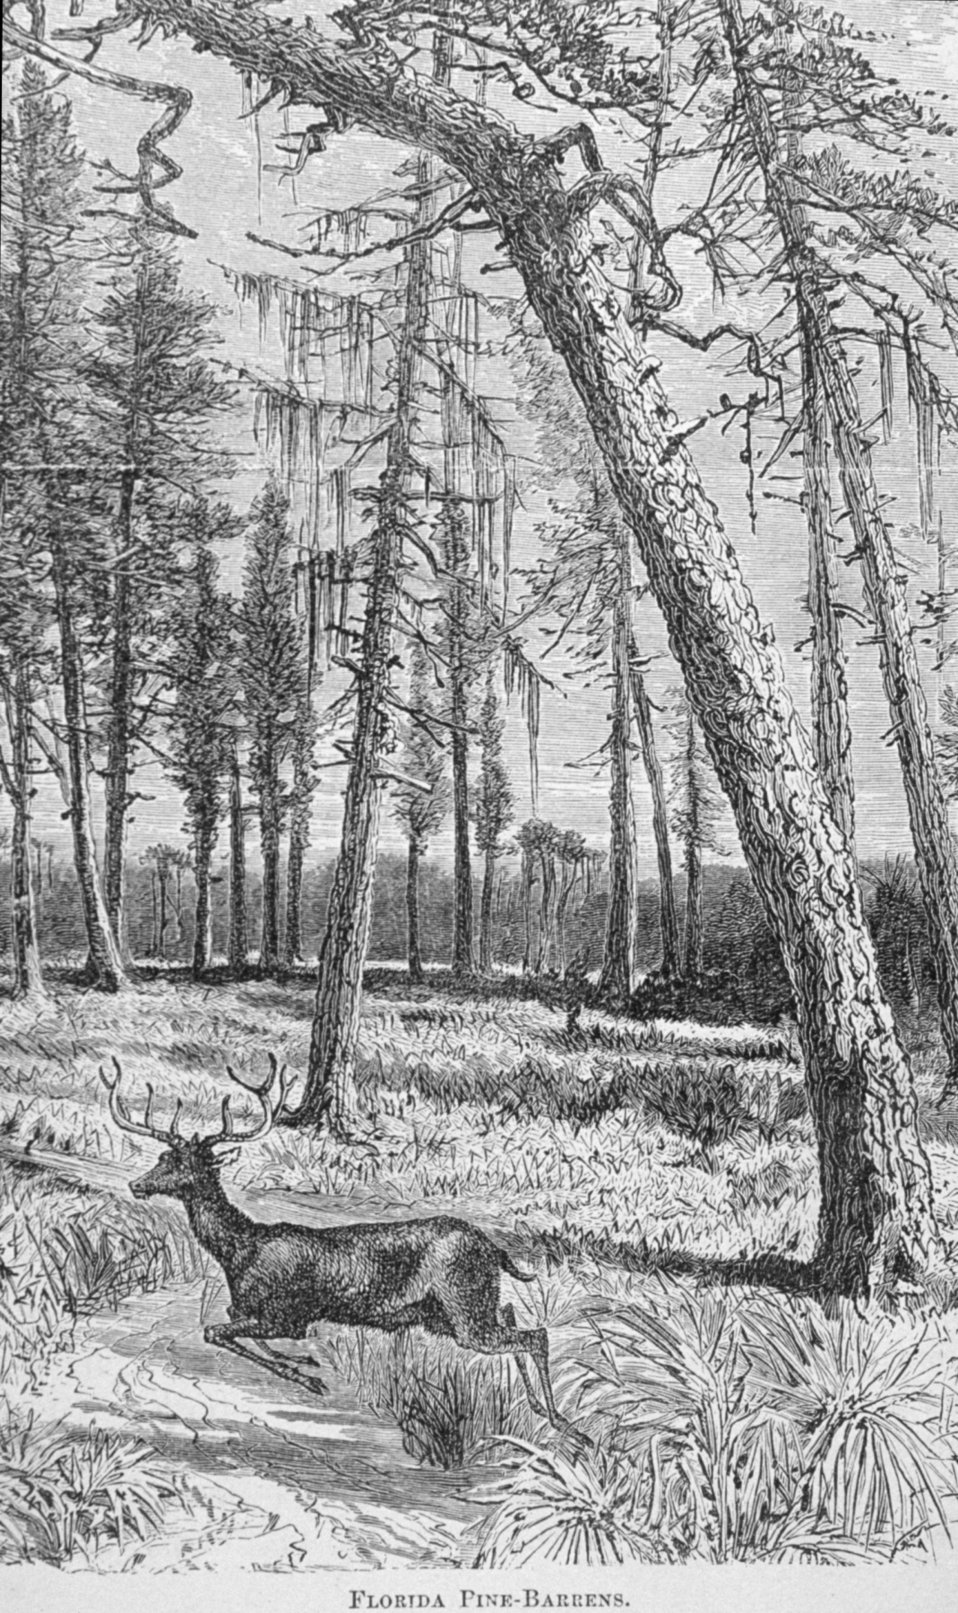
Florida Pine-Barrens - in 'Florida for Tourists, Invalids, and Settlers' by George M. Barbour, 1881. Library Call No. F316 .B23 1881.